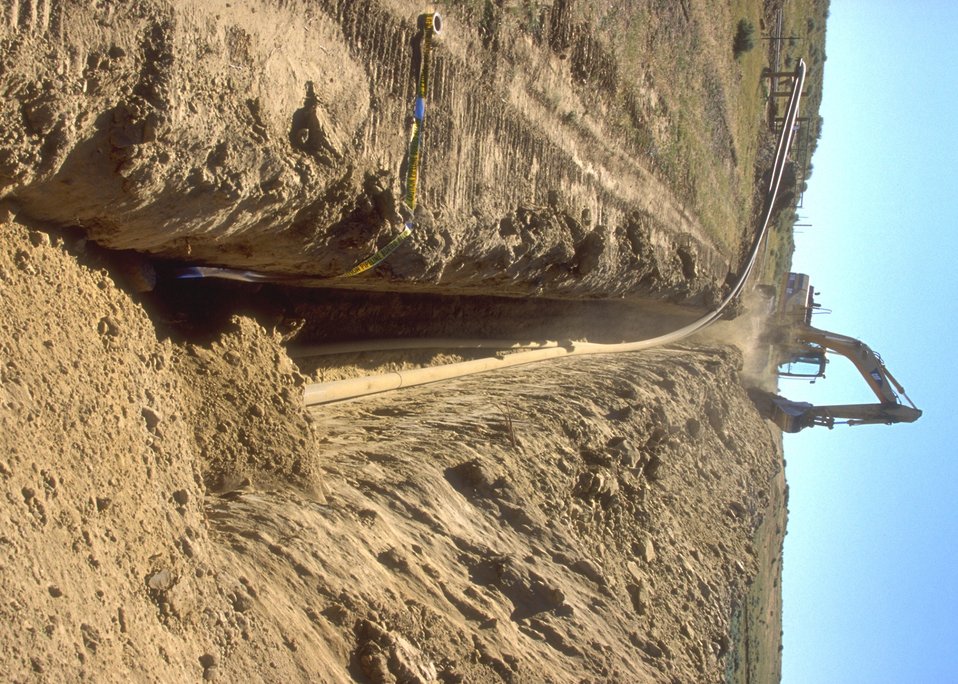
Construction for coal bed methane development, Buffalo Field Office.